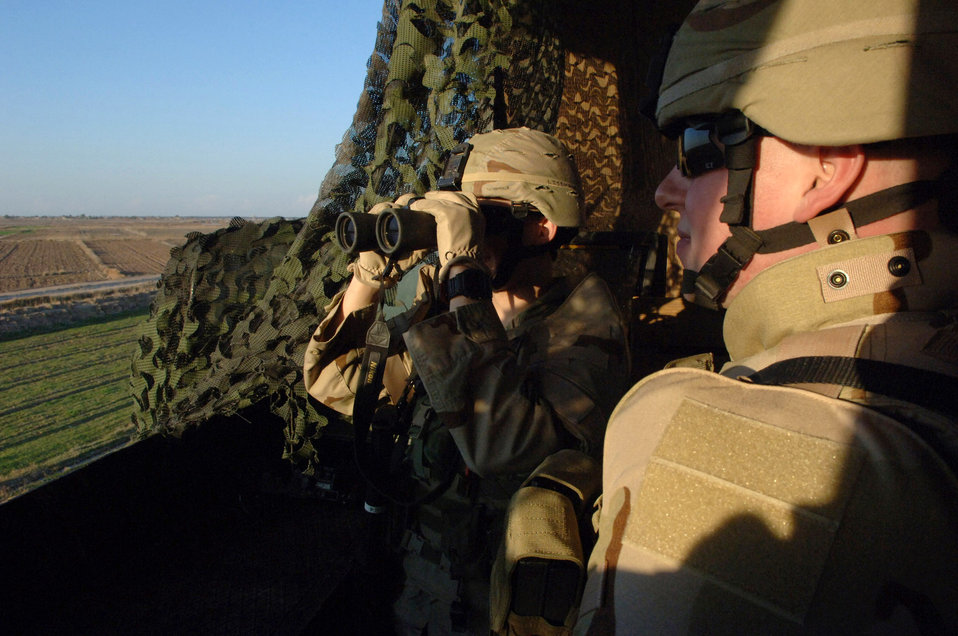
Security forces Airmen protect Iraq's combat airpower hub

Staff Sgt. Joseph Brown and Airman 1st Class Robert Lisenbee use binoculars to survey their sector from a perimeter guard tower Feb. 19 at Balad Air Base, Iraq. The Airmen are assigned to the 332nd Expeditionary Security Forces Squadron.